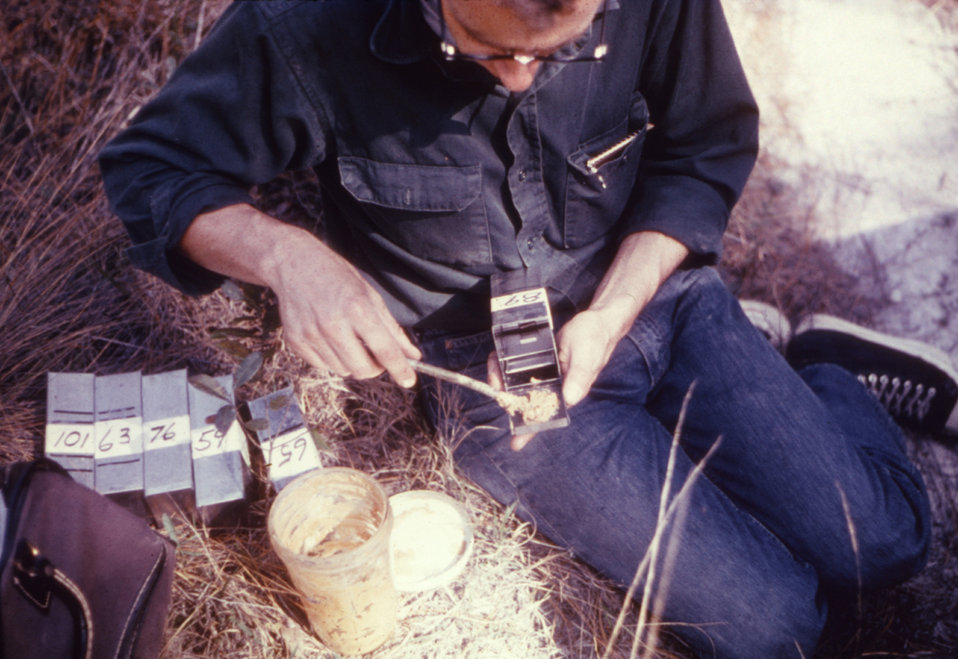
This individual was applying peanut butter to a Sherman Trap� to trap animals during a 1974 arbovirus study.